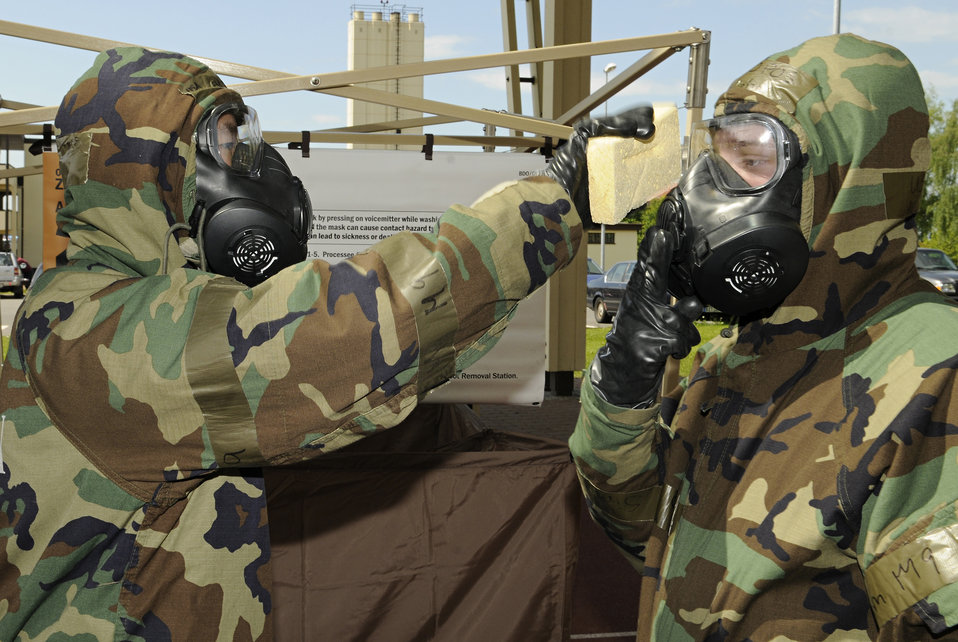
Airmen practice contamination control

Airman 1st Class Raymond Kim uses a simulated bleach solution to wash Airman 1st Class Chris Gallaher's mask as they process through a contamination control area May 20, 2010, at Spangdahlem Air Base, Germany.